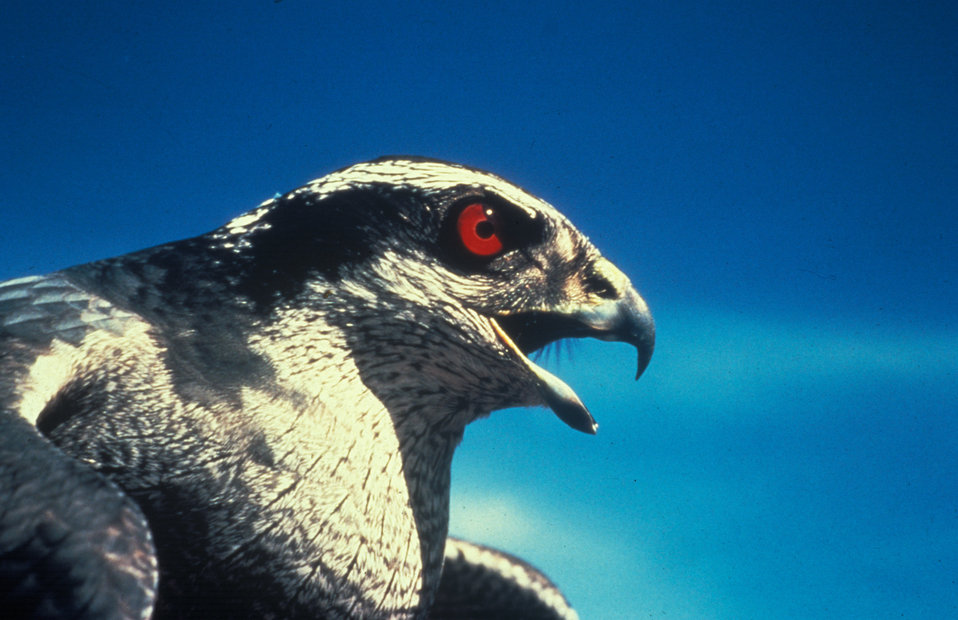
Adult goshawk

A head shot of an adult goshawk.